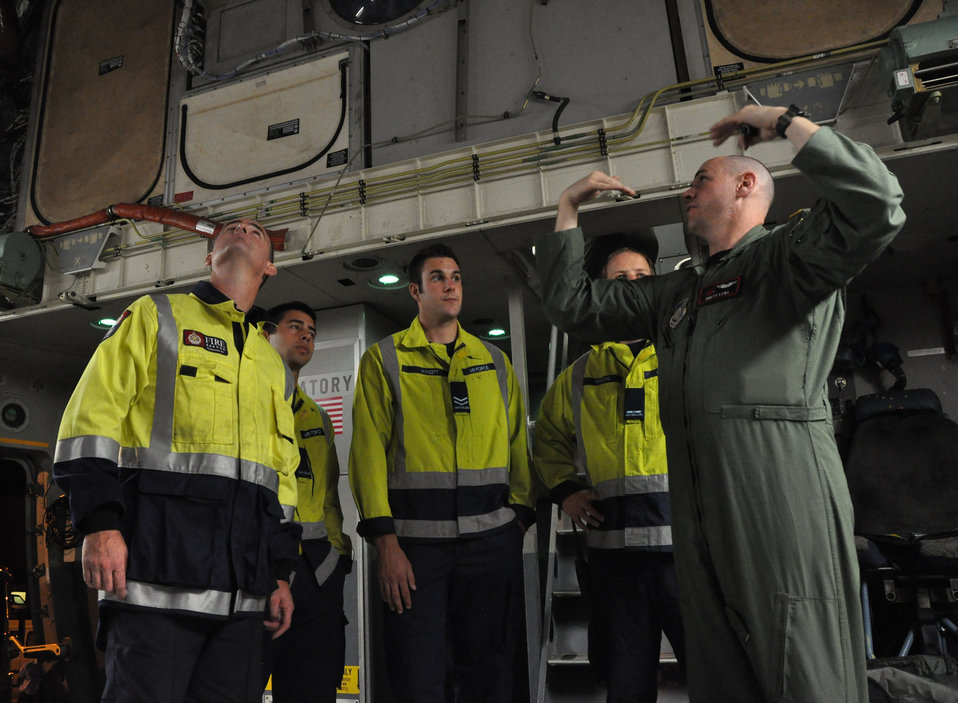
WHENUAPAI AIR SHOW 2009

Capt. Brett Lent, a C-17 Globemaster III pilot with the 517th Airlift Squadron at Elmendorf Air Force Base, Alaska, briefs members of the Royal New Zealand Air Force fire team upon arrival March 18 at Whenuapai Air Base, New Zealand, for the Whenuapai Air Show. This is the first time since 1981 that a U.S. aircraft has participated in the annual event.